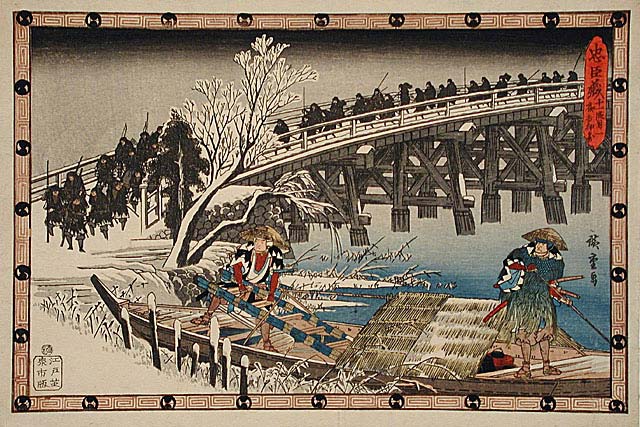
Act XI - 1º Episodio